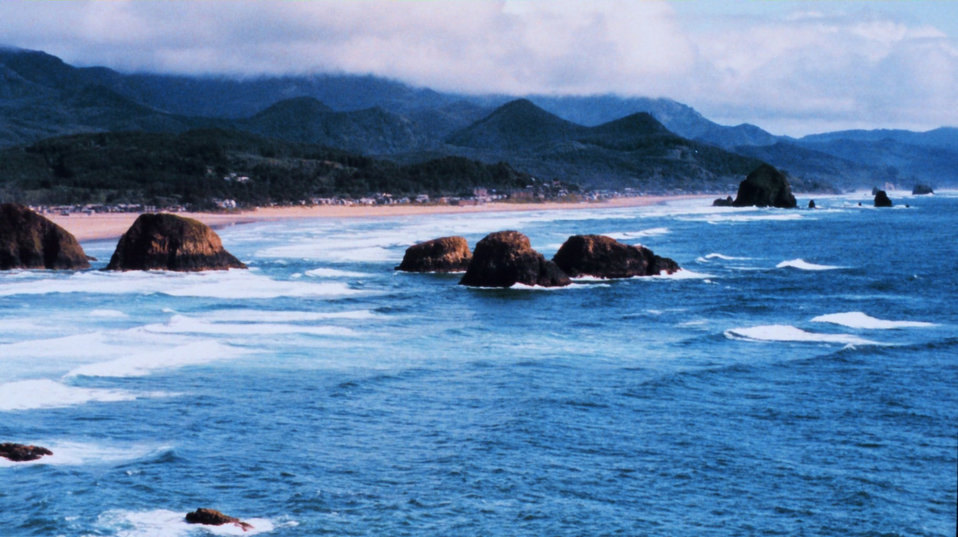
Looking south at Cannon Beach. Haystack Rock is third from right.